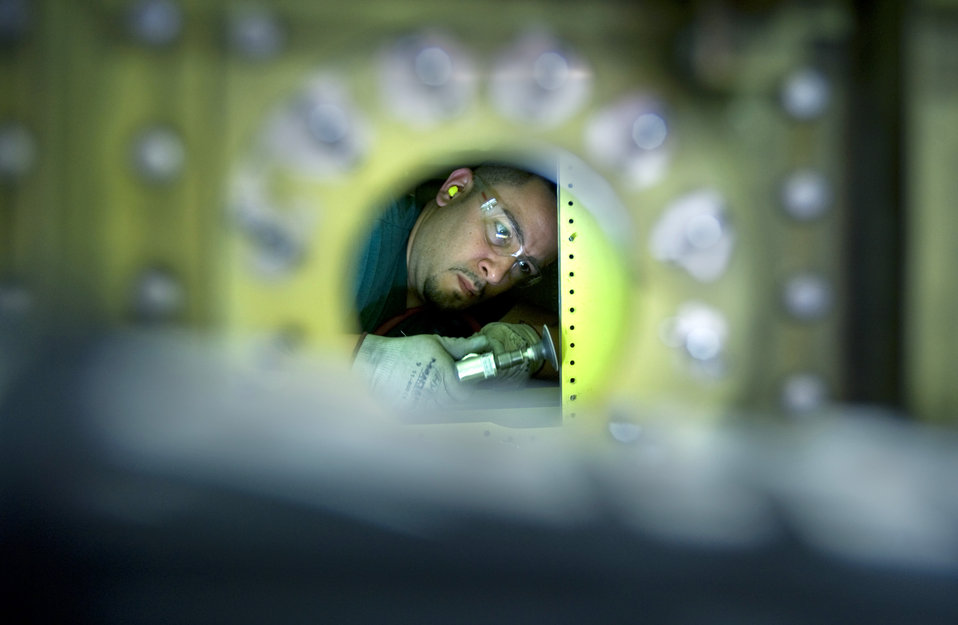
A-10 Hog Up

David Montano grinds down the inner web of an A-10 Thunderbolt II wing Dec. 17, 2009. A-10s are undergoing a wing upgrade at the 309th Aerospace Maintenance and Regeneration Group at Davis-Monthan Air Force Base, Ariz. The upgrade process, affectionately called the